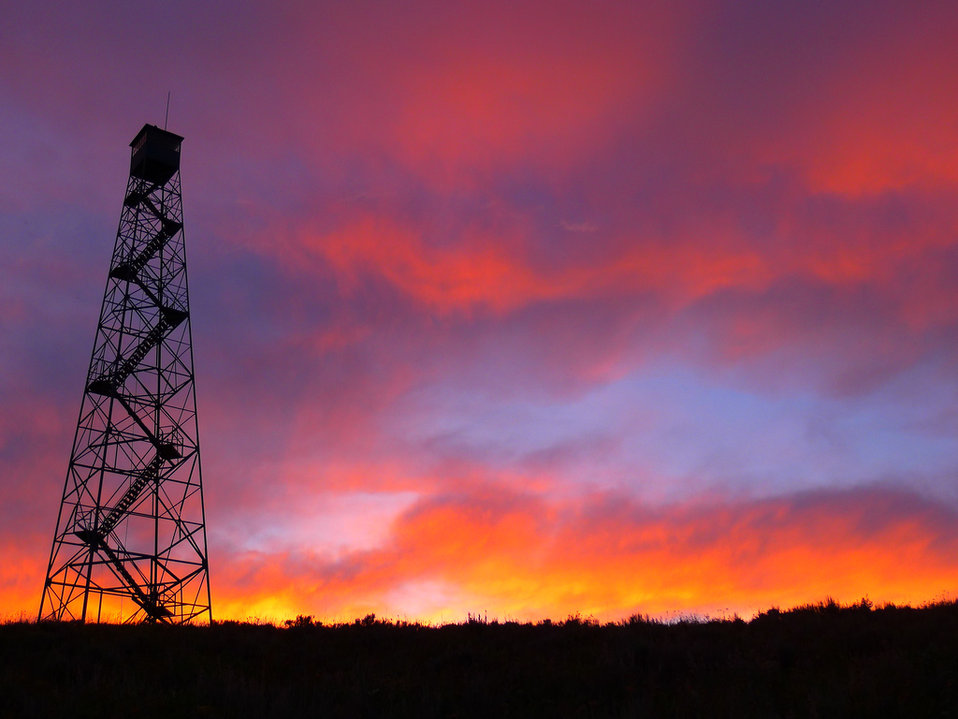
fire tower at sunset

Red Rock Lakes National Wildlife Refuge, MT